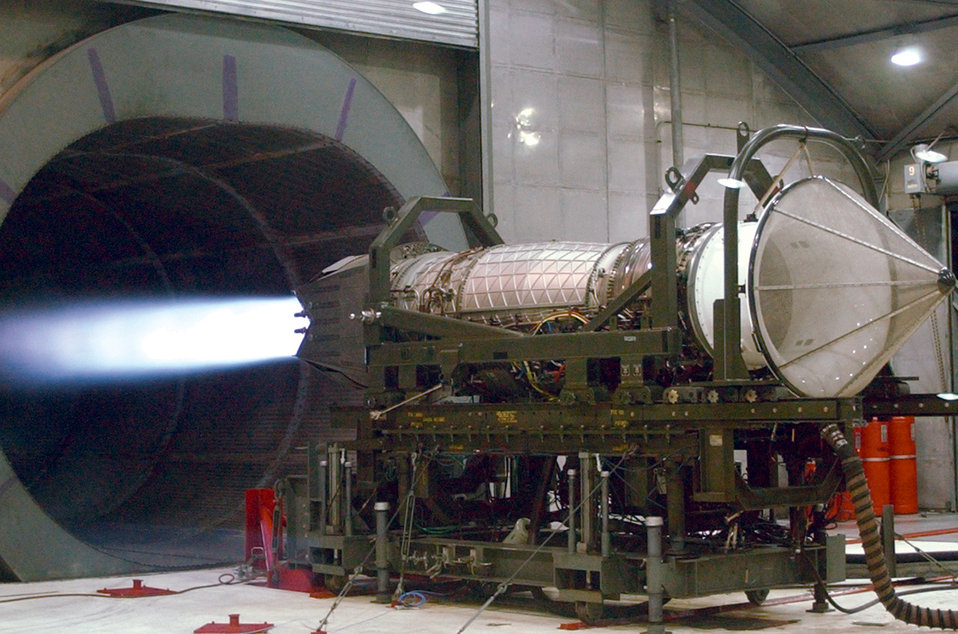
In the hush house

TYNDALL AIR FORCE BASE, Fla. -- A Pratt and Whitney F119 engine runs in full afterburner during an engine test in the